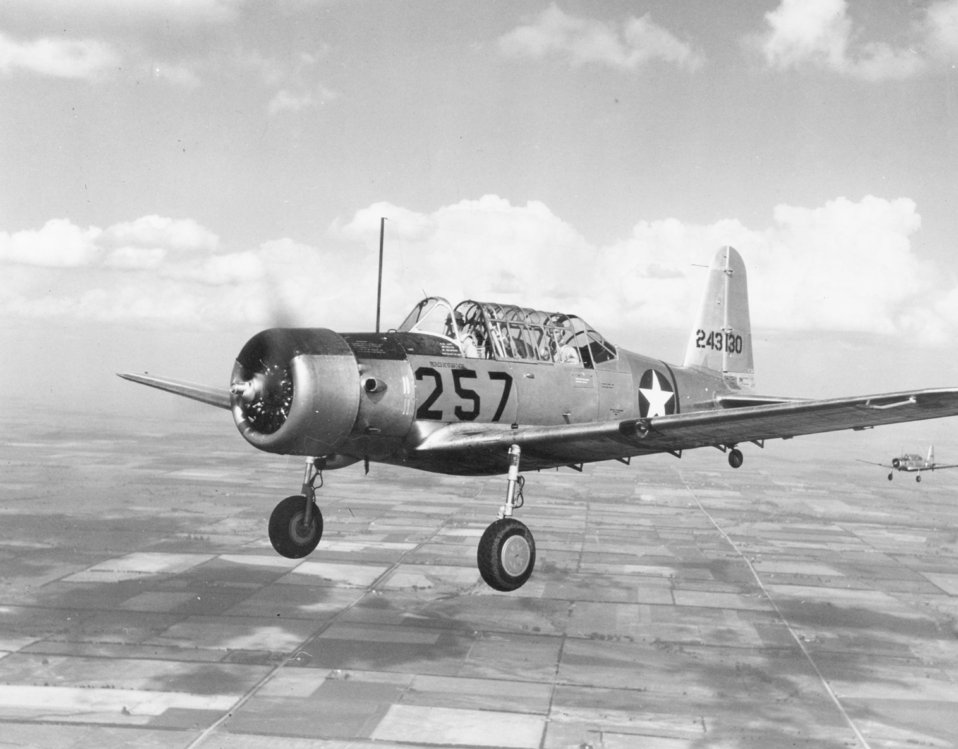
BT-13 Valiant

The BT-13 Valiant served almost exclusively as the basic type for all aircrews trained in the U.S. during World War II. By 1945, the aircraft was being replaced with other advanced models and after the war the aircraft was retired.